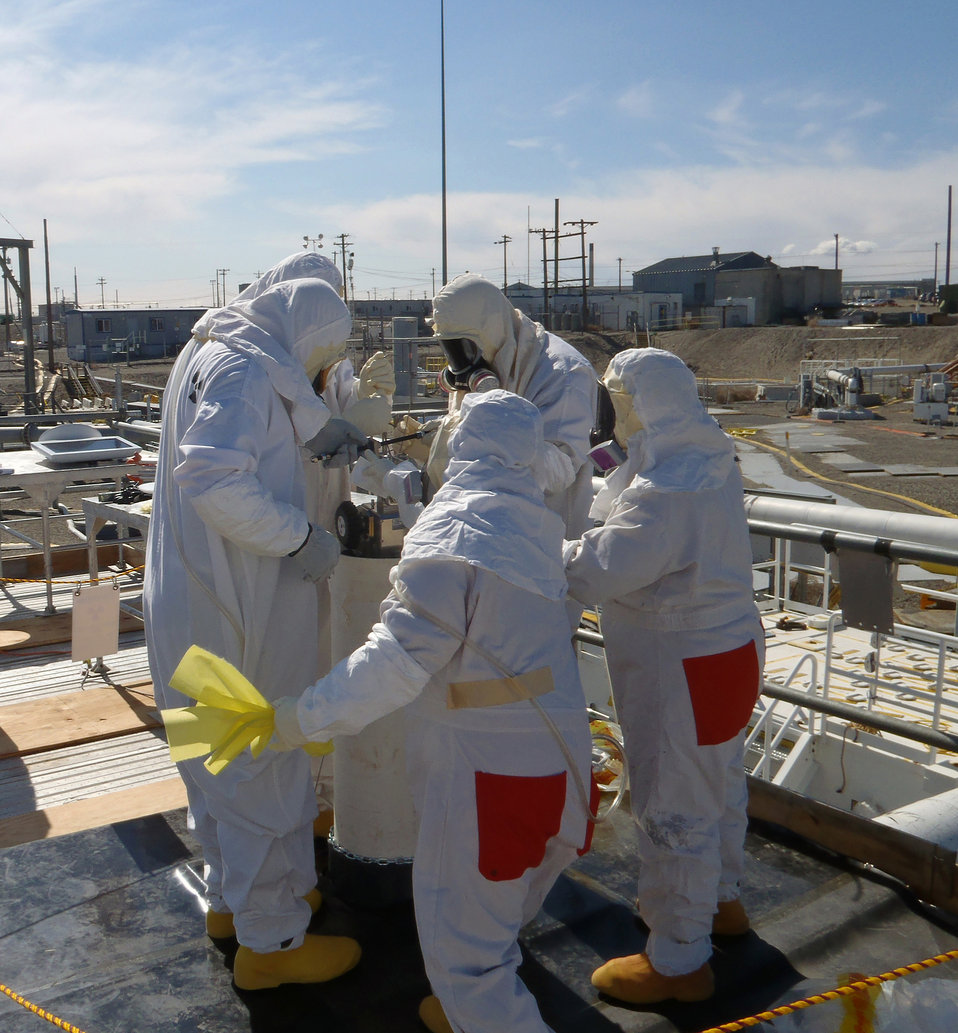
Workers are shown installing a pump in C-109, a single-shell tank that once held 63,000 gallons of waste. The pump was a critical tool in removing the waste from the tank and transferring it to a newer receiving tank for storage.